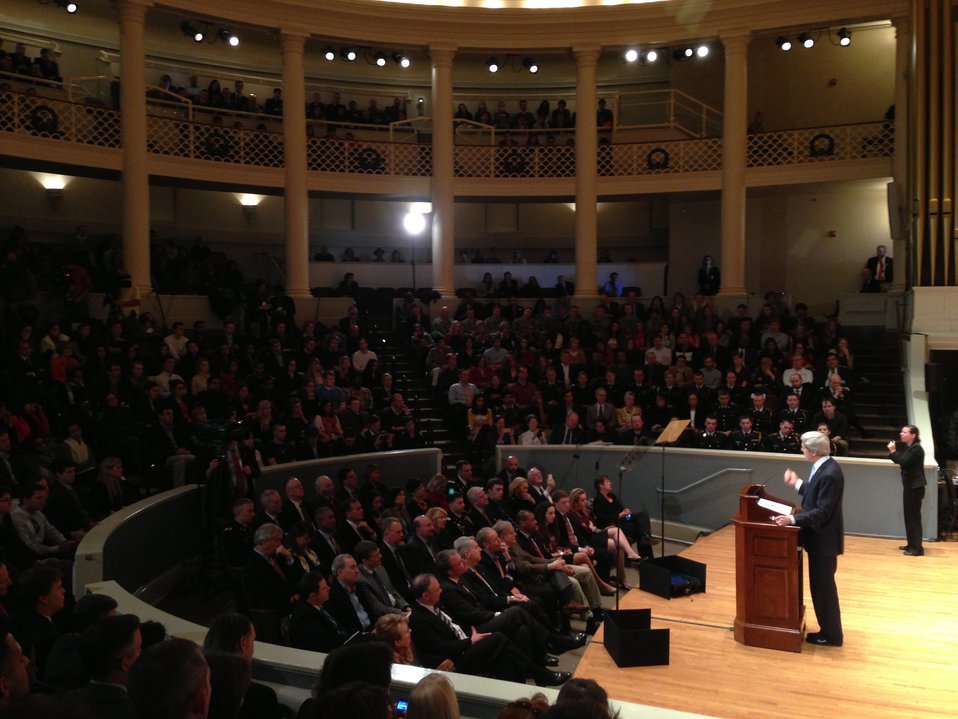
Secretary Kerry Delivers Remarks at UVA

U.S. Secretary of State John Kerry delivers remarks at the University of Virginia in Charlottesville, Virginia, February 20, 2013.